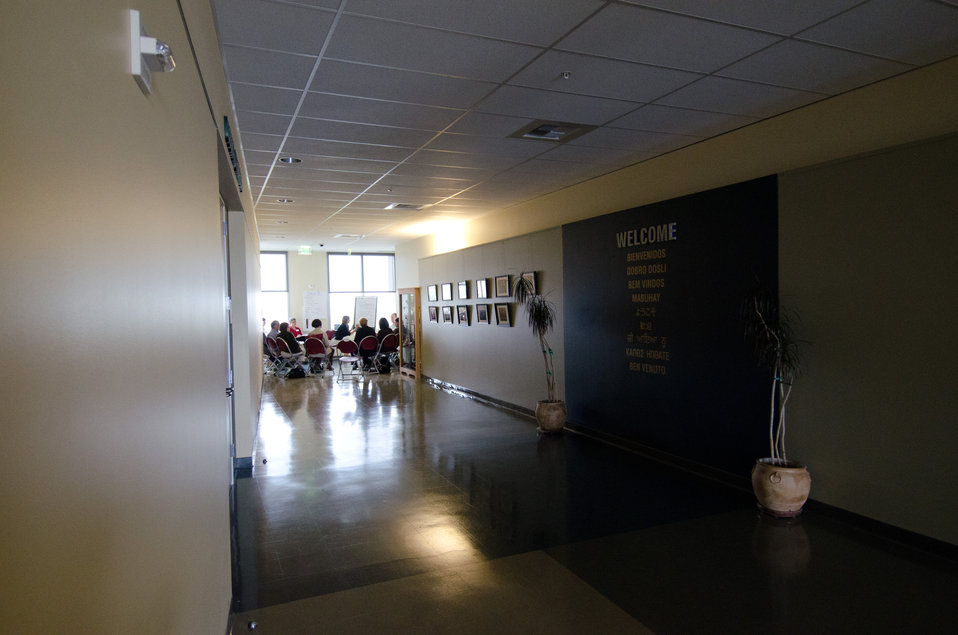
Small groups found their own areas (such as this hallway) away from the sounds of each other groups in the Watsonville Civic Plaza (that is closed Fridays to normal operation) during the America’s Great Outdoors Initiative (AGO) Monterey Bay Pilot Area Focus Session in the City of Watsonville, CA, on Friday, June 17, 2011. Federal and state resource management agencies came together to identify partnership opportunities and determine actions for protection and enhancement of water quality and publicize voluntary stewardship in the watersheds that drain into the Monterey Bay National Marine Sanctuary. This area includes the counties of San Mateo, Santa Cruz, Santa Clara, San Benito, Monterey, and San Luis Obispo. Key questions identified existing multi-county or multi land use partnerships; what is not being done; possible partnerships - collective resources to maximize the benefits to natural resources and communities; and additional resources that organizations can bring to maximize AGO. President Barack Obama signed the initiative on April 16, 2010 to develop a 21st Century conservation and recreation agenda.